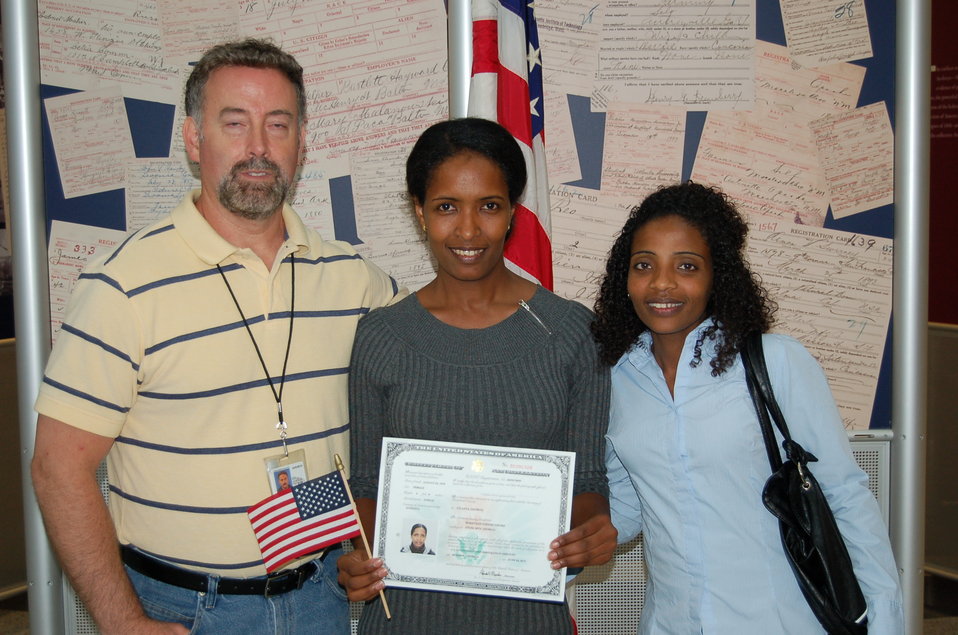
New Citizens